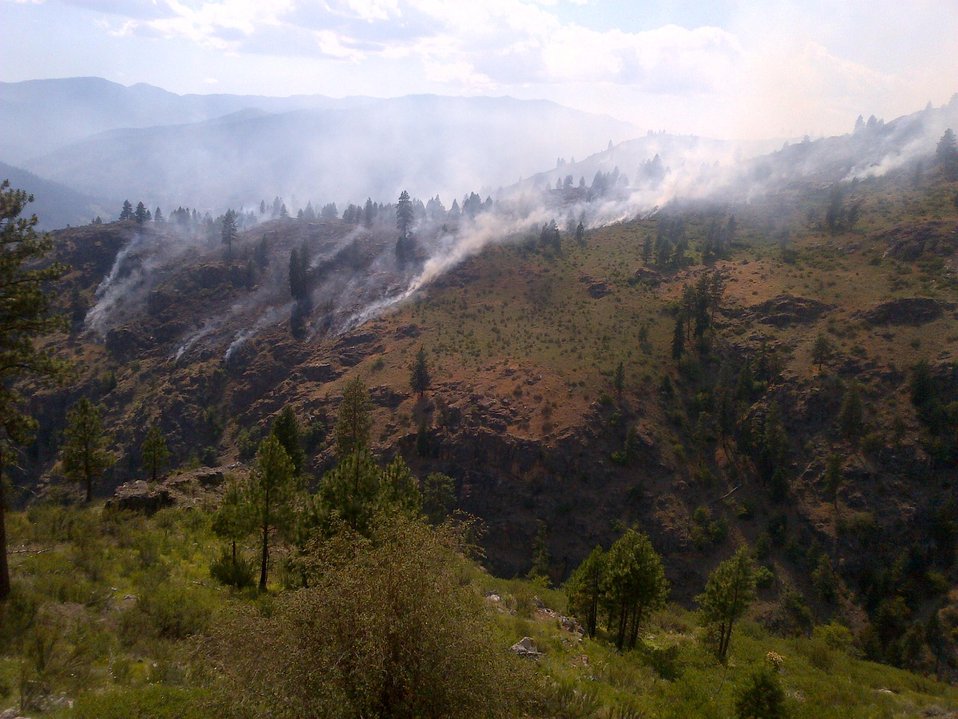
View across and into Gold Creek from above the 25-Mile Fire. The steep, rugged terrain, and some of the area's greener, unburned fuels make for a difficult environment. The 25 Mile Fire near Manson, WA began on Jul. 04, 2013 is under investigation and has consumed approximately 2,098 acres and is approximately 70% contained.